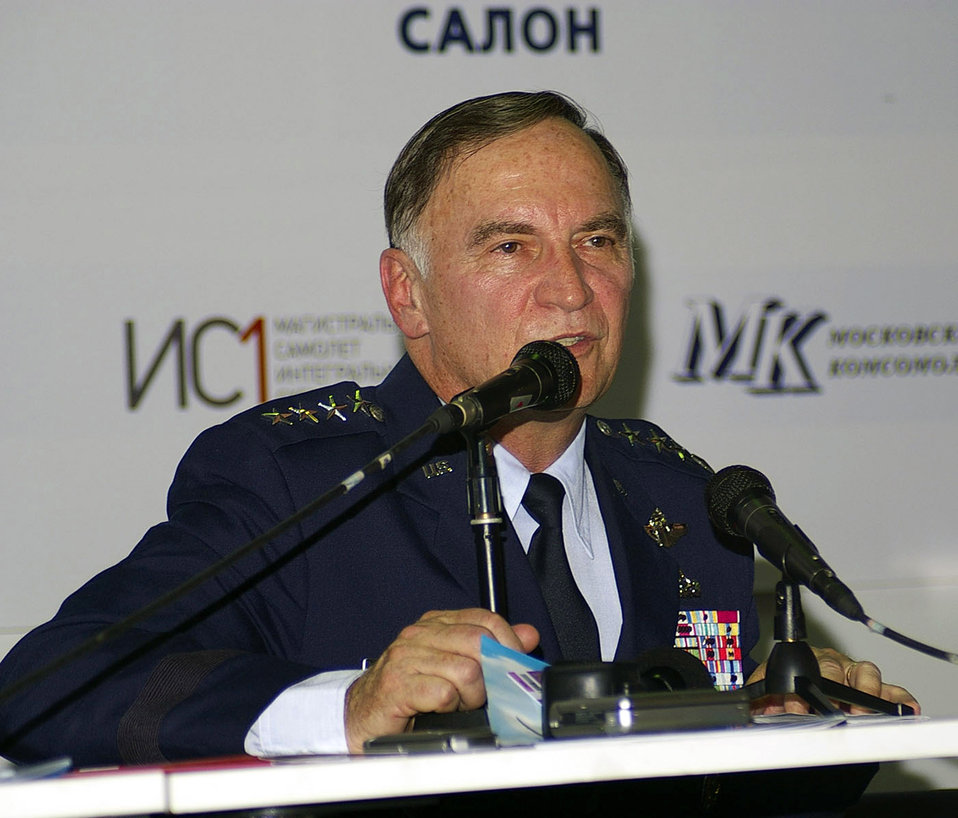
Airmen participate in Moscow International Air Show

Gen. William T. Hobbins talks during a press conference during the opening day of the Moscow International Air Show Aug. 21 in Zhukovsky, Russia. The air show runs through Aug. 26 and includes Department of Defense participation of static displays and aerial flight demonstrations. General Hobbins is commander of U.S. Air Forces in Europe. About 65 Airmen from bases worldwide are participating in this year's air show.